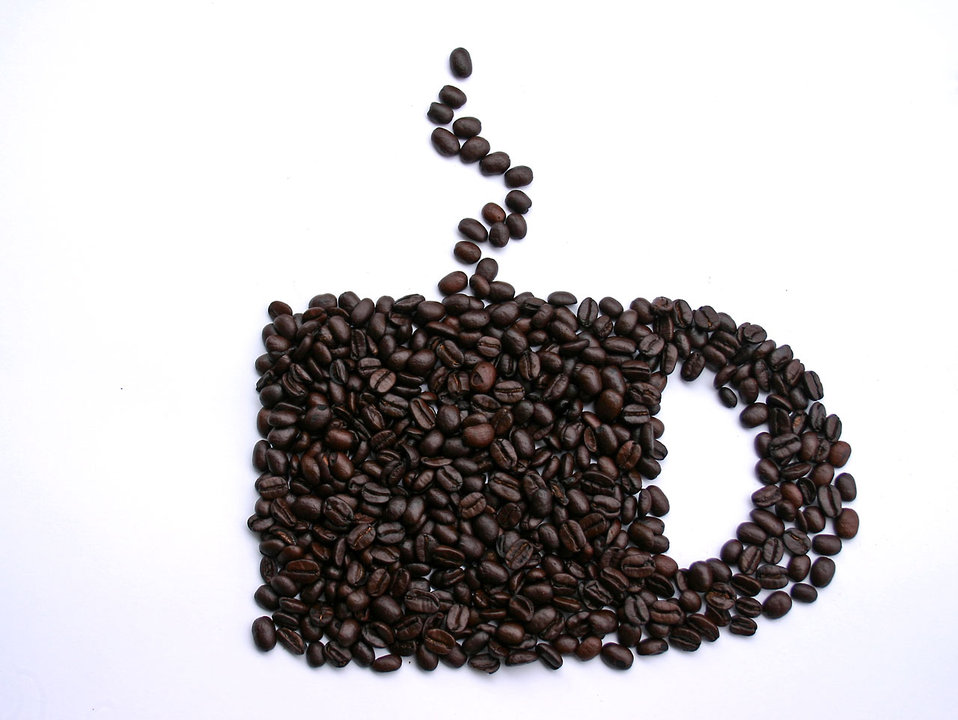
Coffee cup

Cup shape of dark roast (my fav) coffee beans.